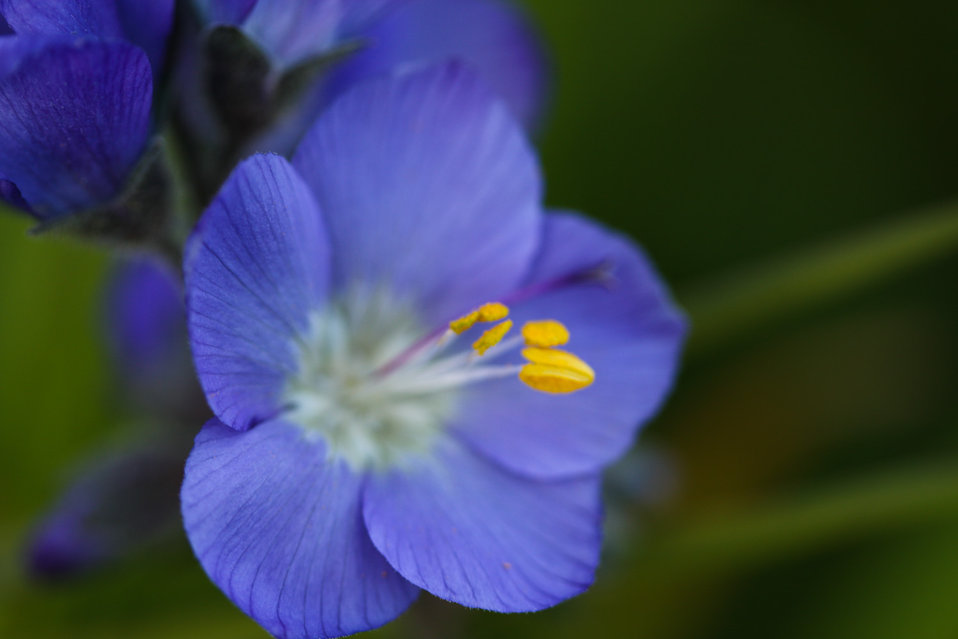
Wild geranium

Lisa Hupp/USFWS